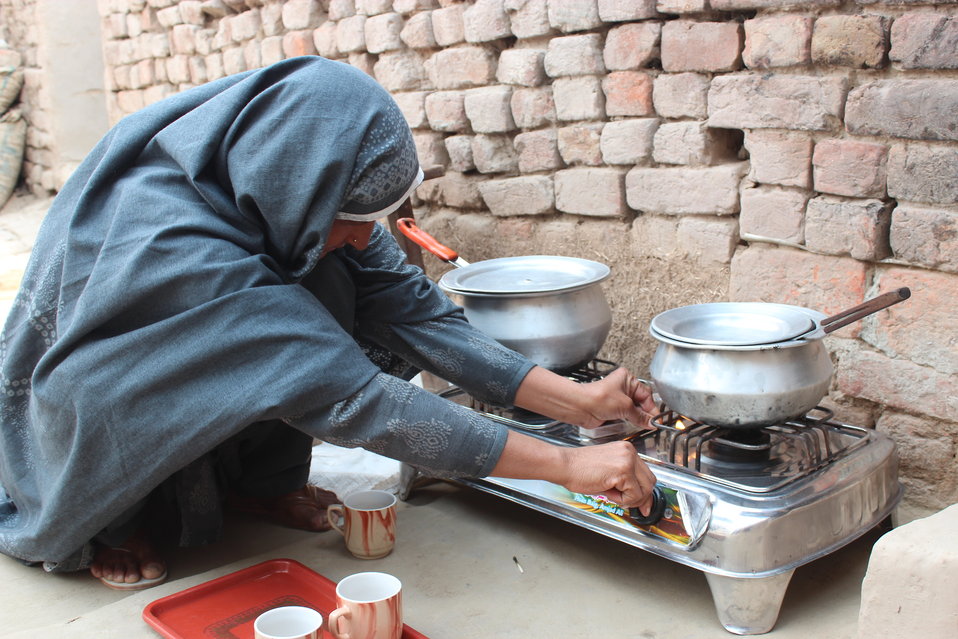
bio-gas2